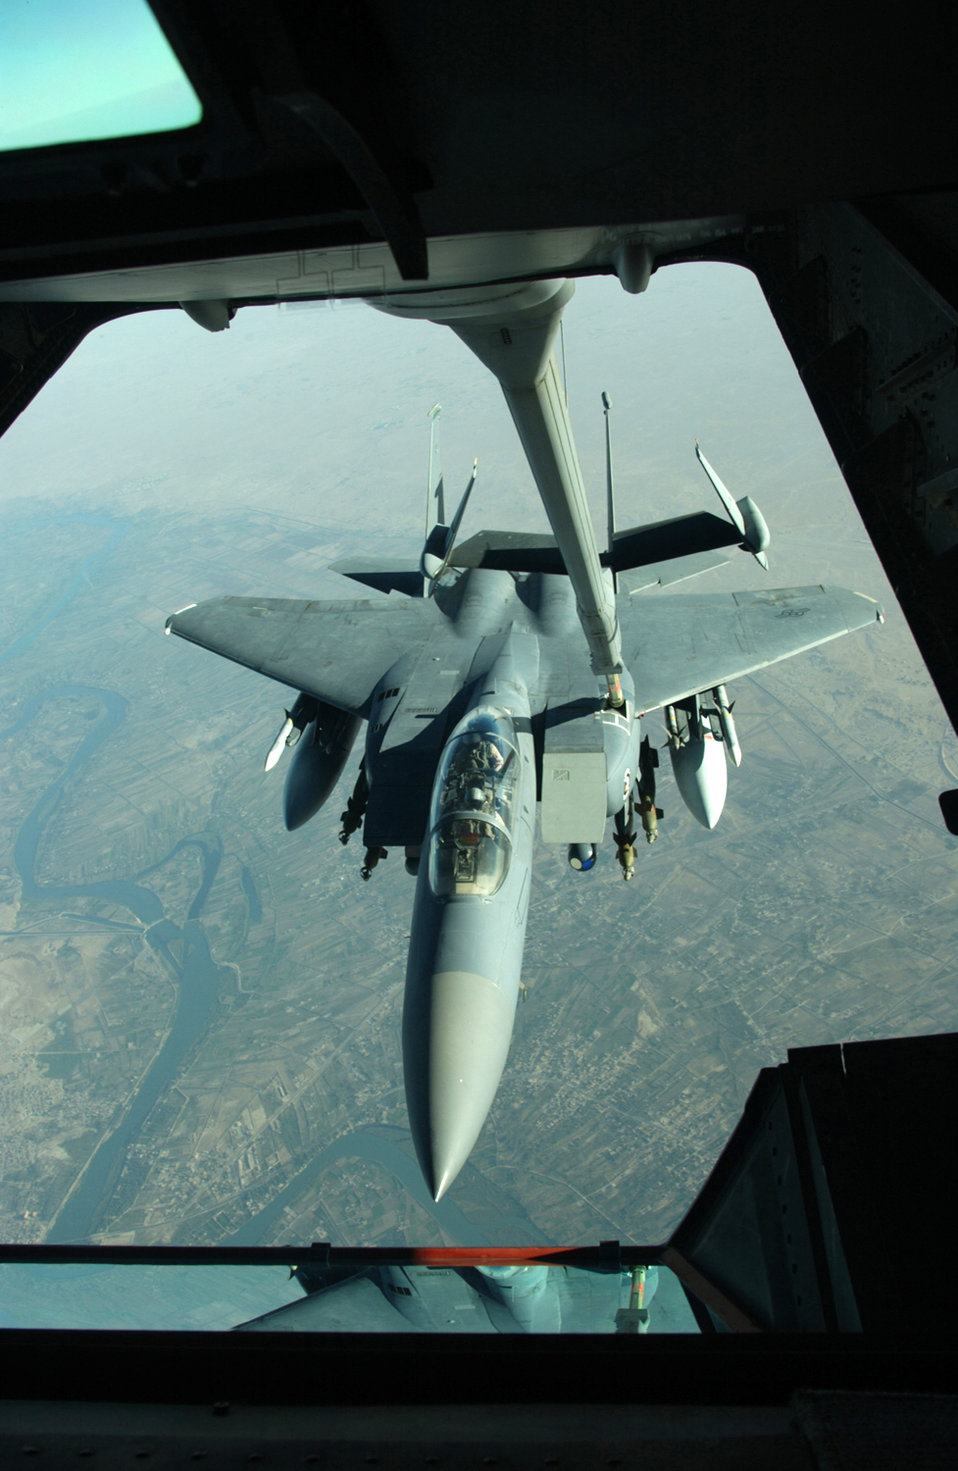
Tankers fuel war on terror

OVER IRAQ -- An F-15E Strike Eagle receives fuel from a 908th Expeditionary Aerial Refueling Squadron KC-10 Extender during a mission over Iraq.